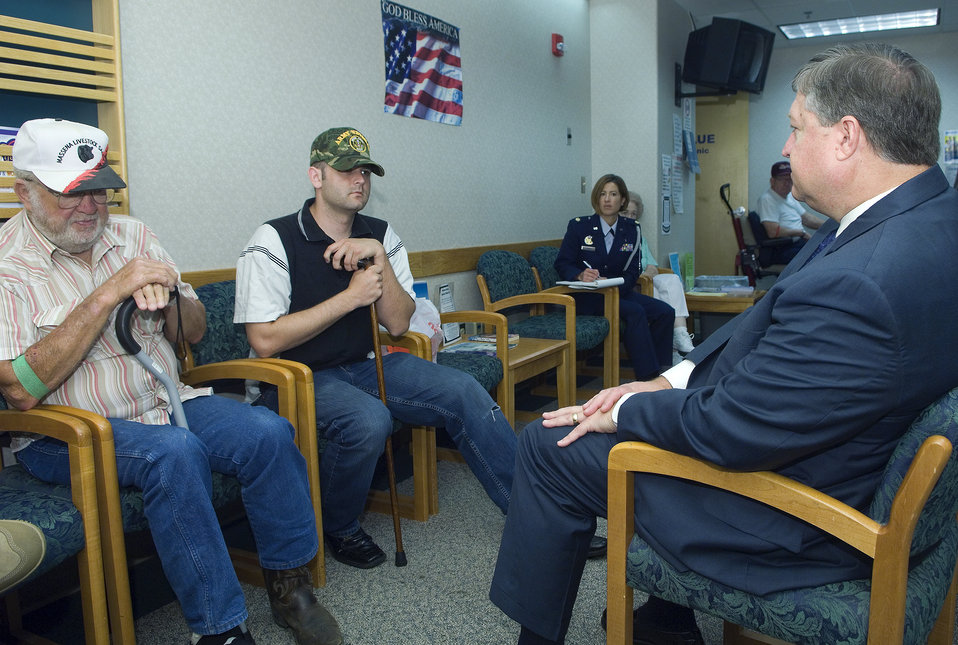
Air Force secretary meets veterans, addresses issues

Acting Secretary of the Air Force Michael B. Donley speaks with Air Force veteran Thomas Riley (left) and Army National Guard veteran Sgt. Jamie Ruddick (right) about their time in service during an Aug. 11 tour of the VA Medical Center in Omaha, Neb. Secretary Donley visited with veterans living in the Omaha area during his visit as part of Air Force Week in the Heartland.